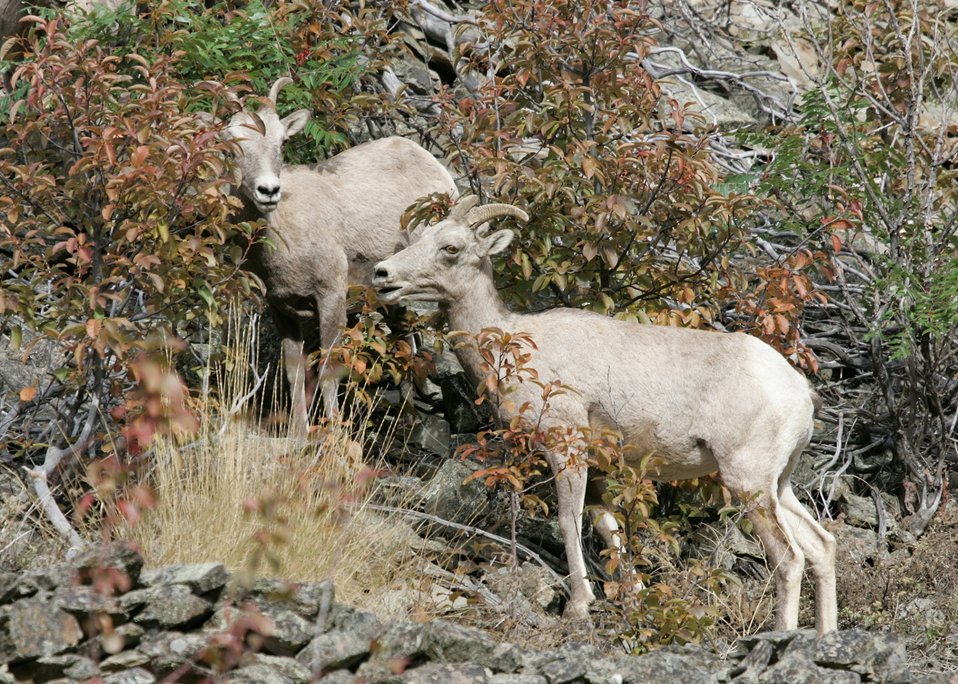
Bighorn sheep in the Connor Creek watershed in eastern Oregon.